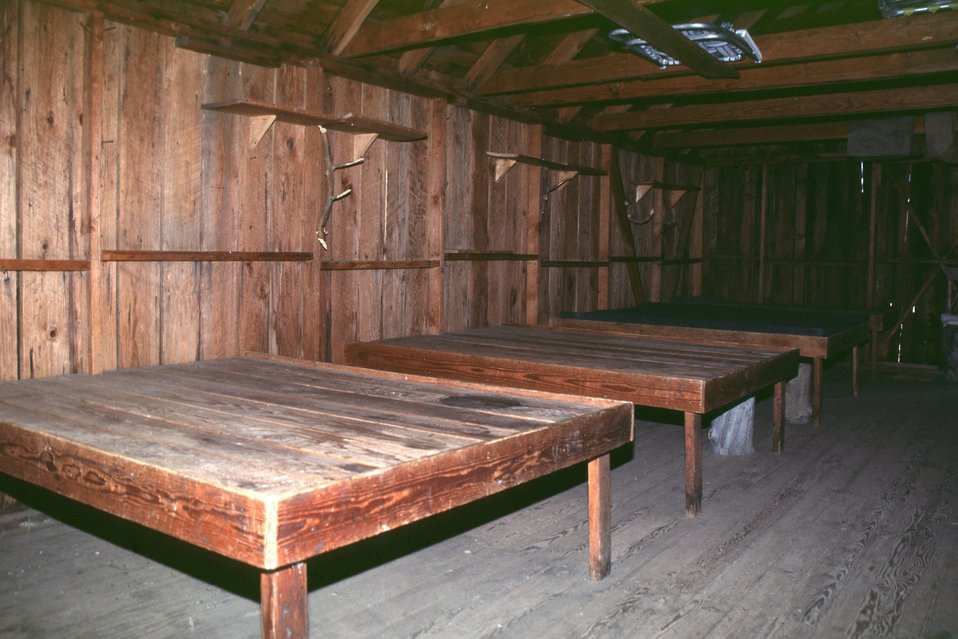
Bunks in Nye Cabin with skull. Ny Place rim side of road, right side of Wilderness signs.